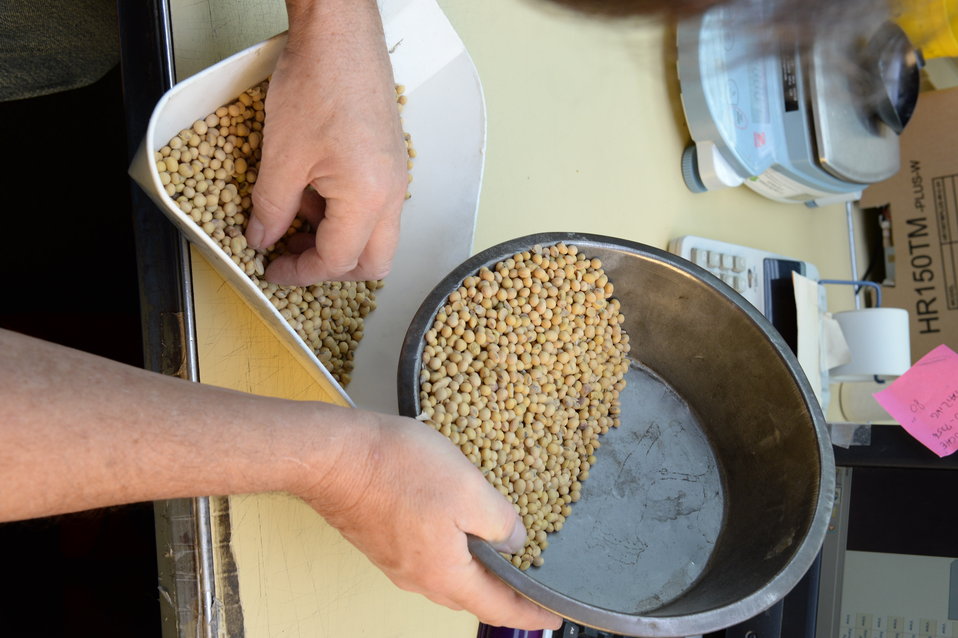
U.S. Department of Agriculture (USDA) Grain Inspection, Packers and Stockyards Administration (GIPSA) Federal Grain Inspection Service (FGIS) employee examines grain samples at the FGIS inspection laboratory in New Orleans, LA on Monday, Nov. 18, 2013.